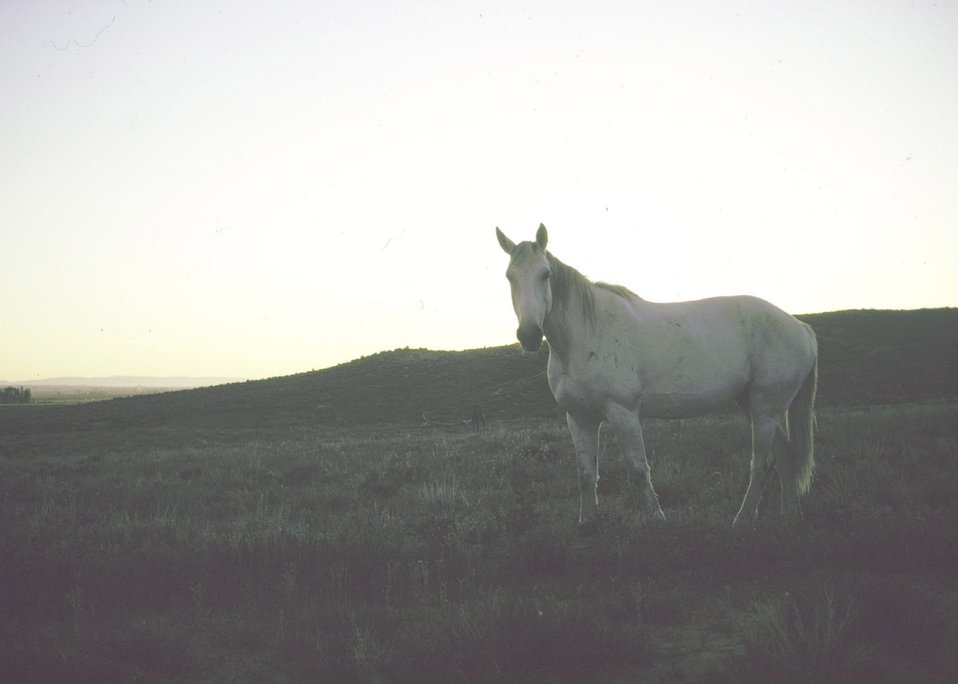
Wild horse at dusk in Wyoming.